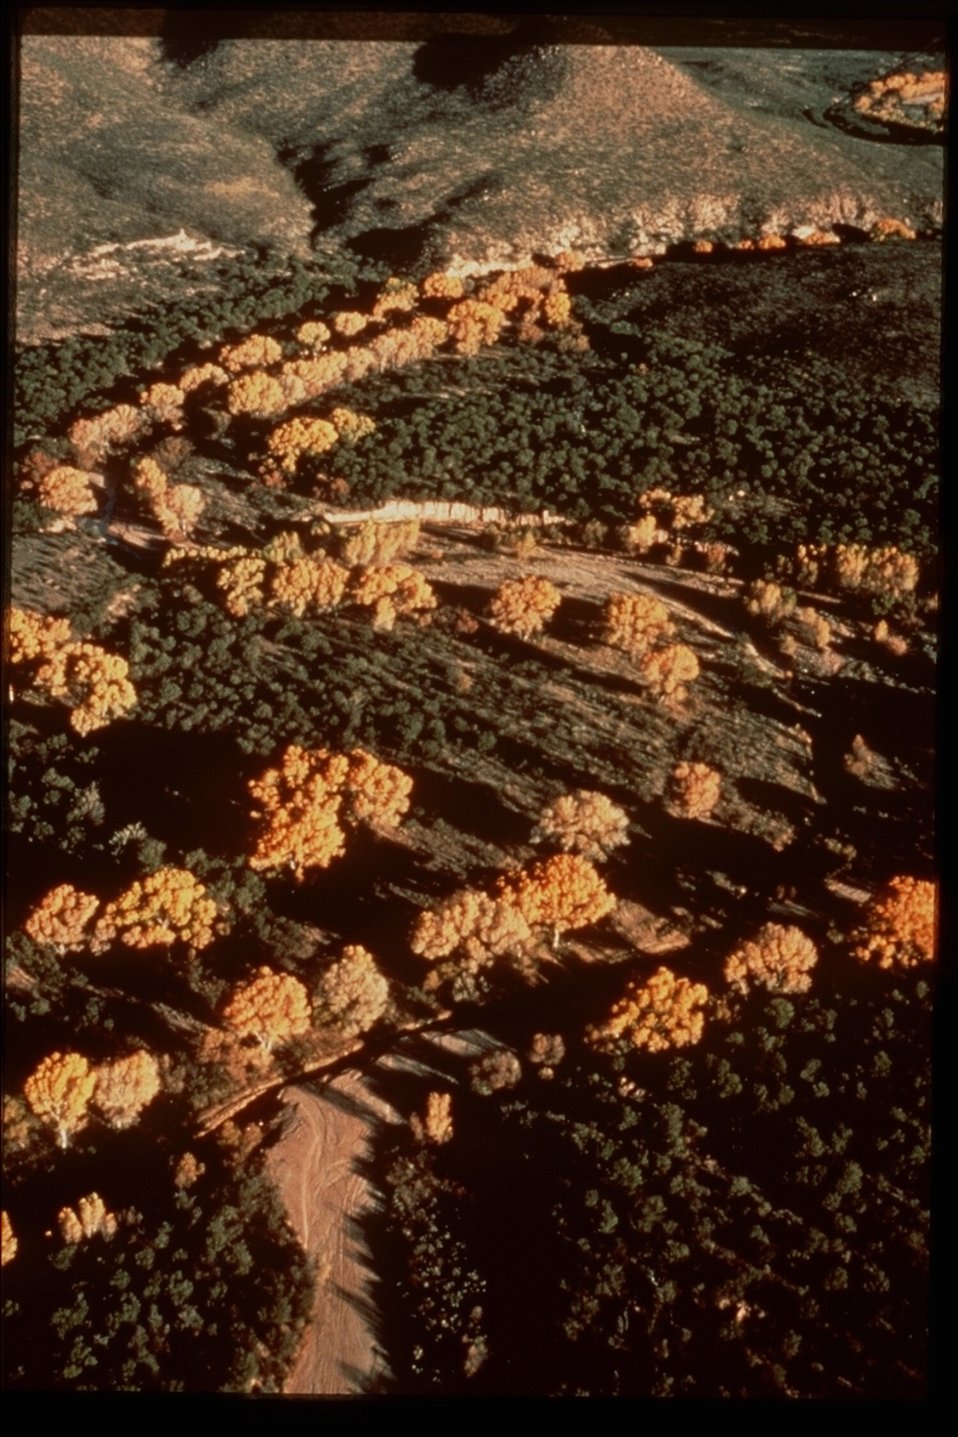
A beautiful overhead view of the San Pedro Riparian National Conservation Area.